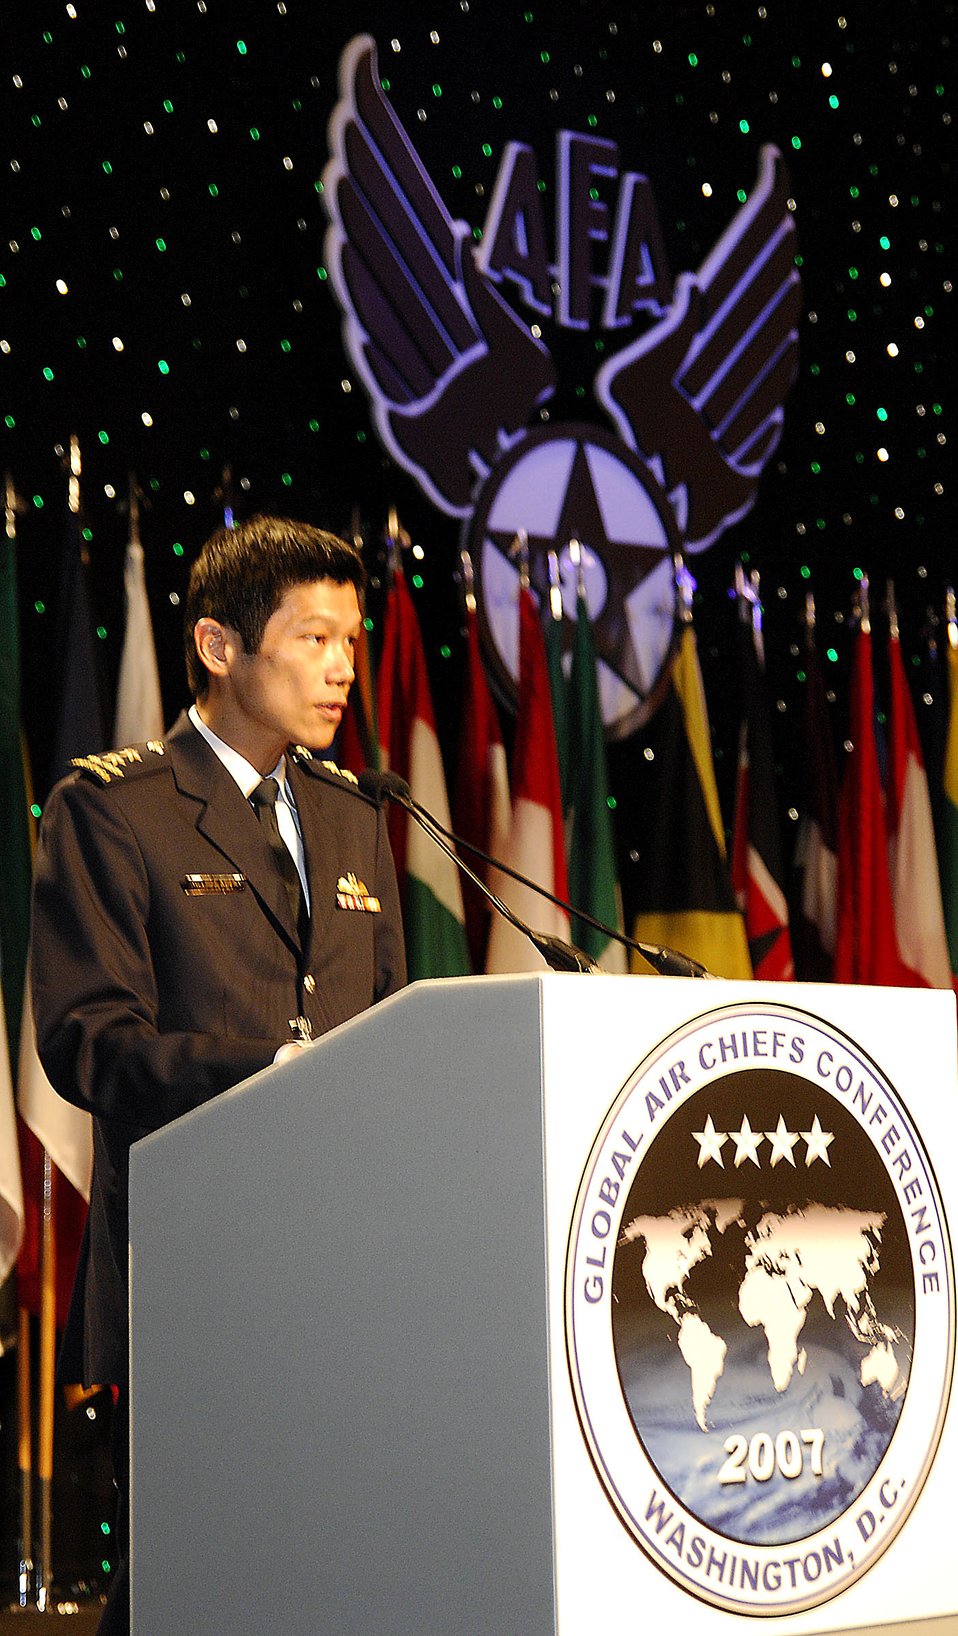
Global Air Chiefs Conference hosts second air chiefs forum

Maj. Gen. Ng Chee Khern addresses more than 90 international air chiefs during the Global Air Chiefs Conference forum Sept. 25 in Washington. Three forums are being held to discuss air power issues across the globe. Hosted by Gen. T. Michael Moseley, the conference runs concurrently with the Air Force Association's Air & Space Conference and Technology Exposition. General Ng is the Republic of Singapore air force chief. General Mosley is the U.S. Air Force chief of staff.